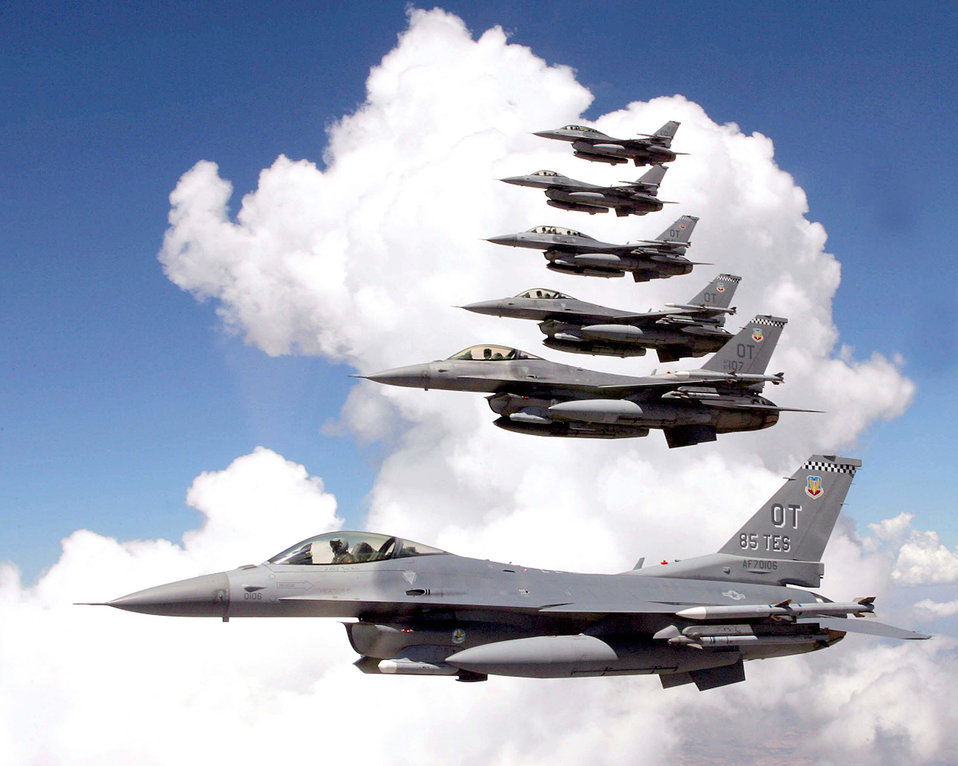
Edwards, Eglin combine testing on next-generation F-16

OVER CALIFORNIA -- Six F-16 Fighting Falcons fly in formation during combined developmental and operational testing of the M4.2-plus core avionics suite upgrade to the aircraft. The formation consists of operational test aircraft from Eglin Air Force Base, Fla., and developmental test aircraft from Edwards AFB, Calif.